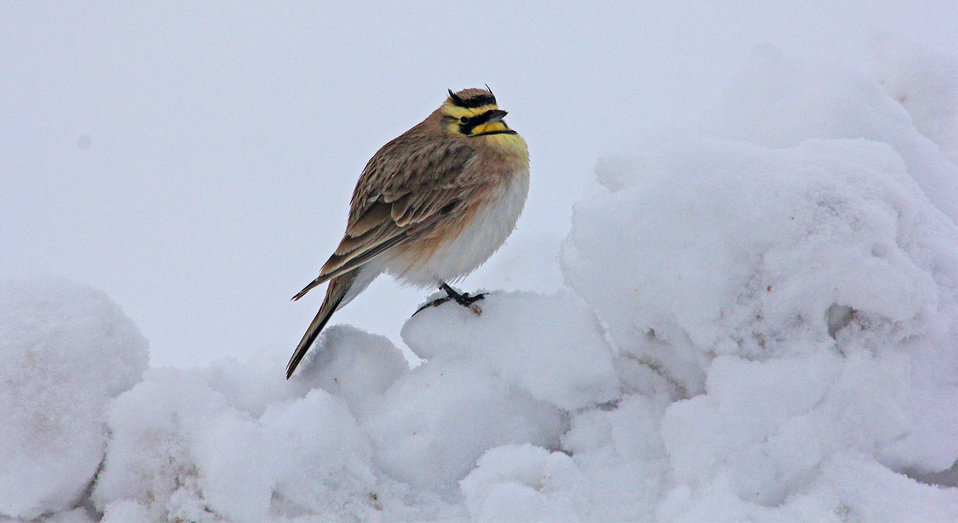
A Cold Perch

A horned lark sits on a pile of frozen slush at the National Elk Refuge.

Credit: USFWS / Tony Hough, National Elk Refuge volunteer